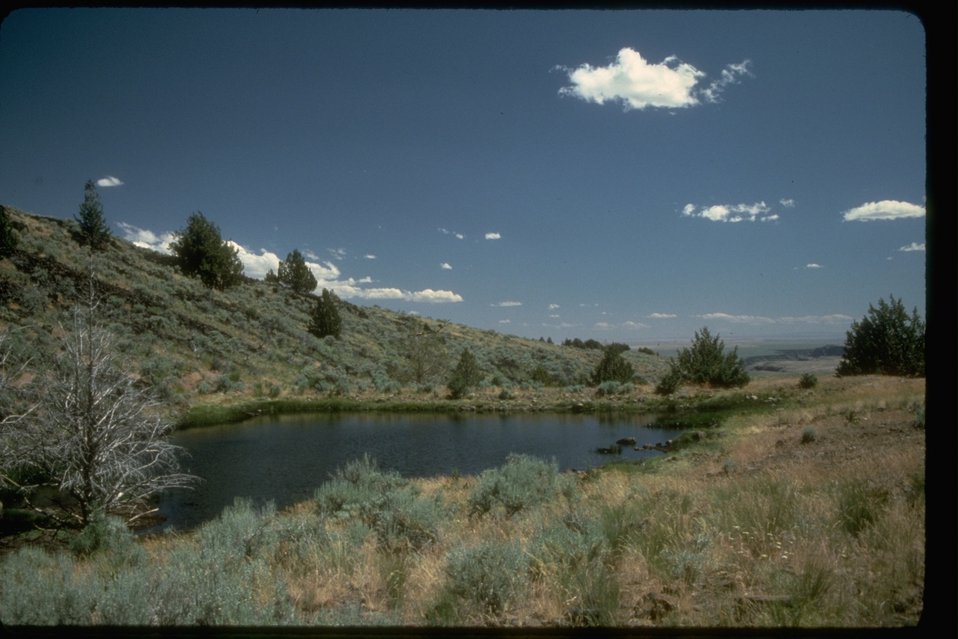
Upland stock reservoir.